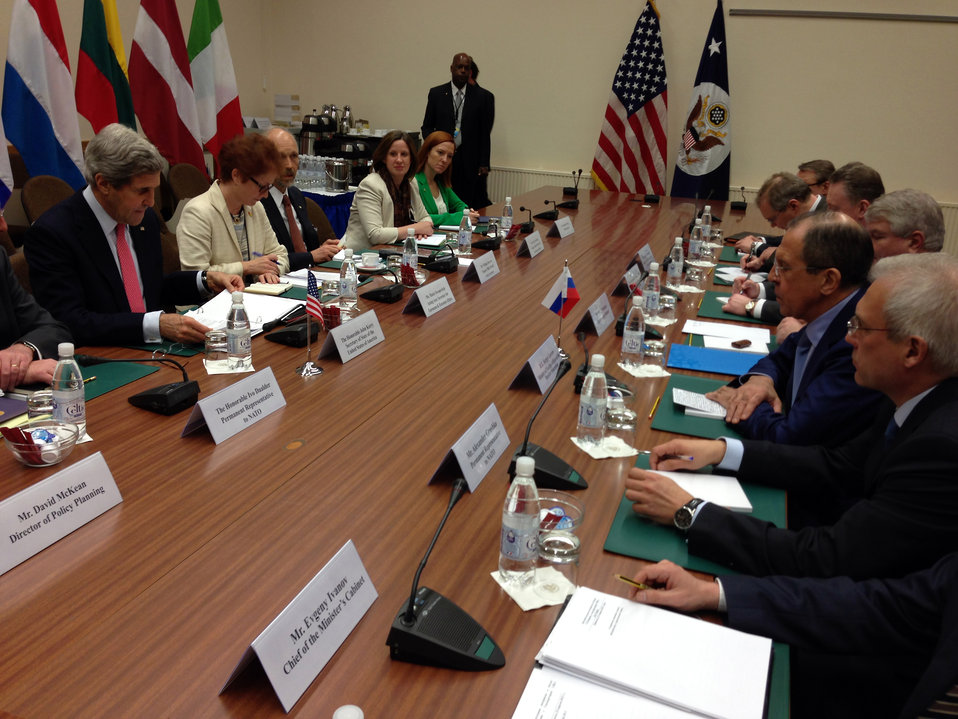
Secretary Kerry Meets With Russian Foreign Minister Lavrov

U.S. Secretary of State John Kerry holds a bilateral meeting with Russian Foreign Minister Sergey Lavrov in Brussels, Belgium, on April 23, 2013.